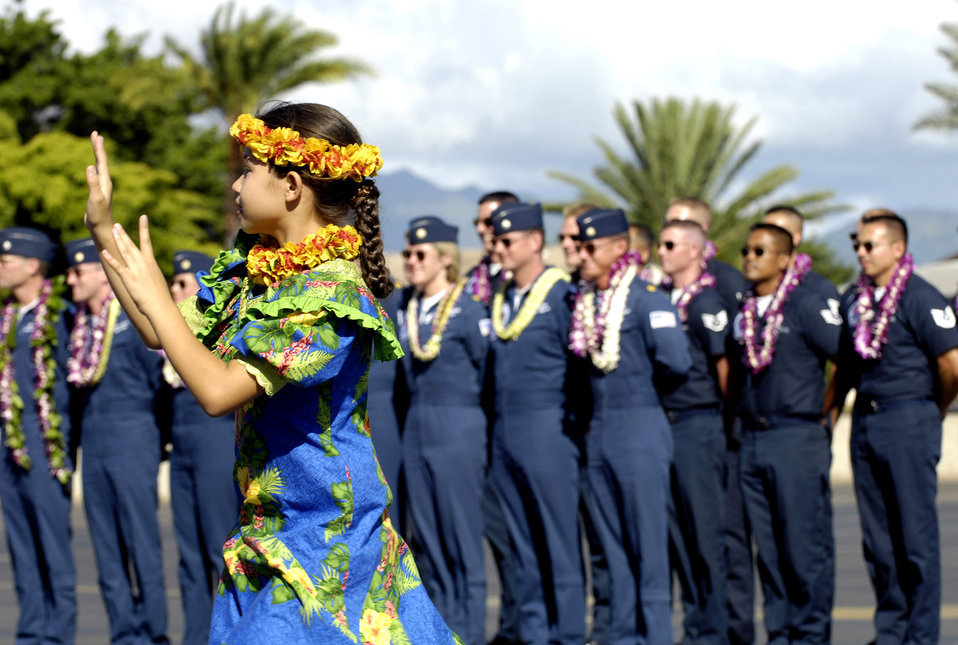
Thunderbirds arrive for Air Force Week Honolulu

Members of the Air Force Air Demonstration Squadron, the Thunderbirds, are welcomed to Hickam Air Force Base, Hawaii, Sept. 12. The team is performing as part of Air Force Week Honolulu, which runs Sept. 8 through 15.